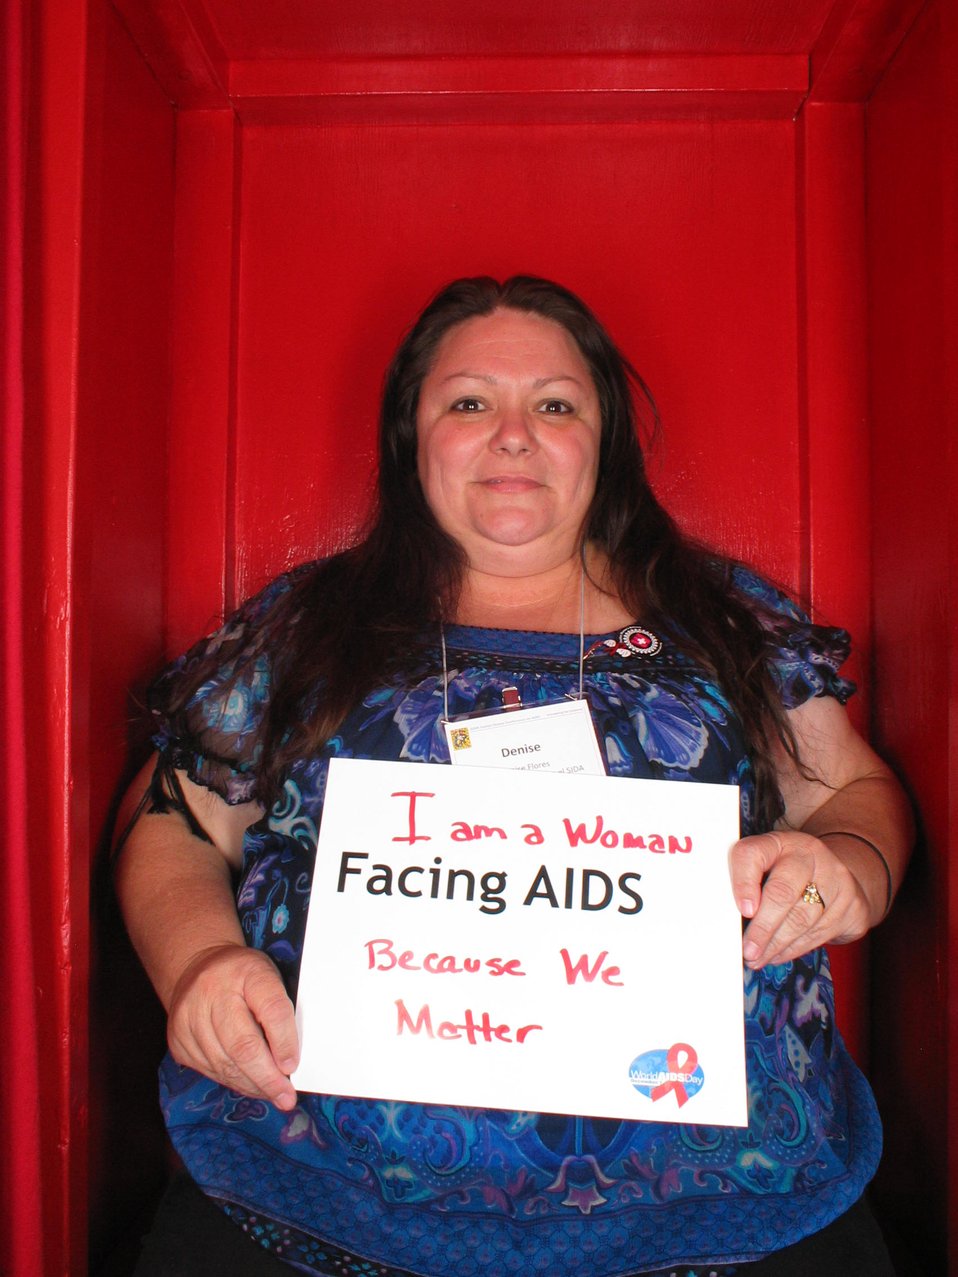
I am a woman Facing AIDS because we matter.